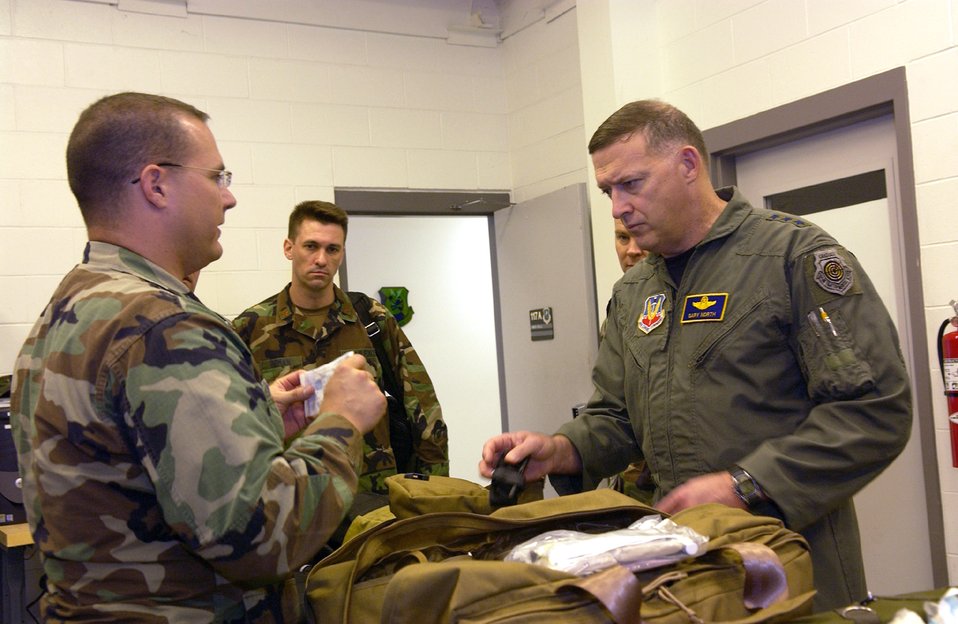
9th Air Force commander visits Moody

Capt. David Williams briefs Lt. Gen. Gary L. North, 9th Air Force commander, during his tour at Moody Air Force Base, Ga., on Wednesday, April 19, 2006. The captain showed the general the new warrior aid and liter kit, which is an expanded, vehicle-mounted self-aid and buddy care system. Captain Williams is assigned to the 820th Security Forces Group.